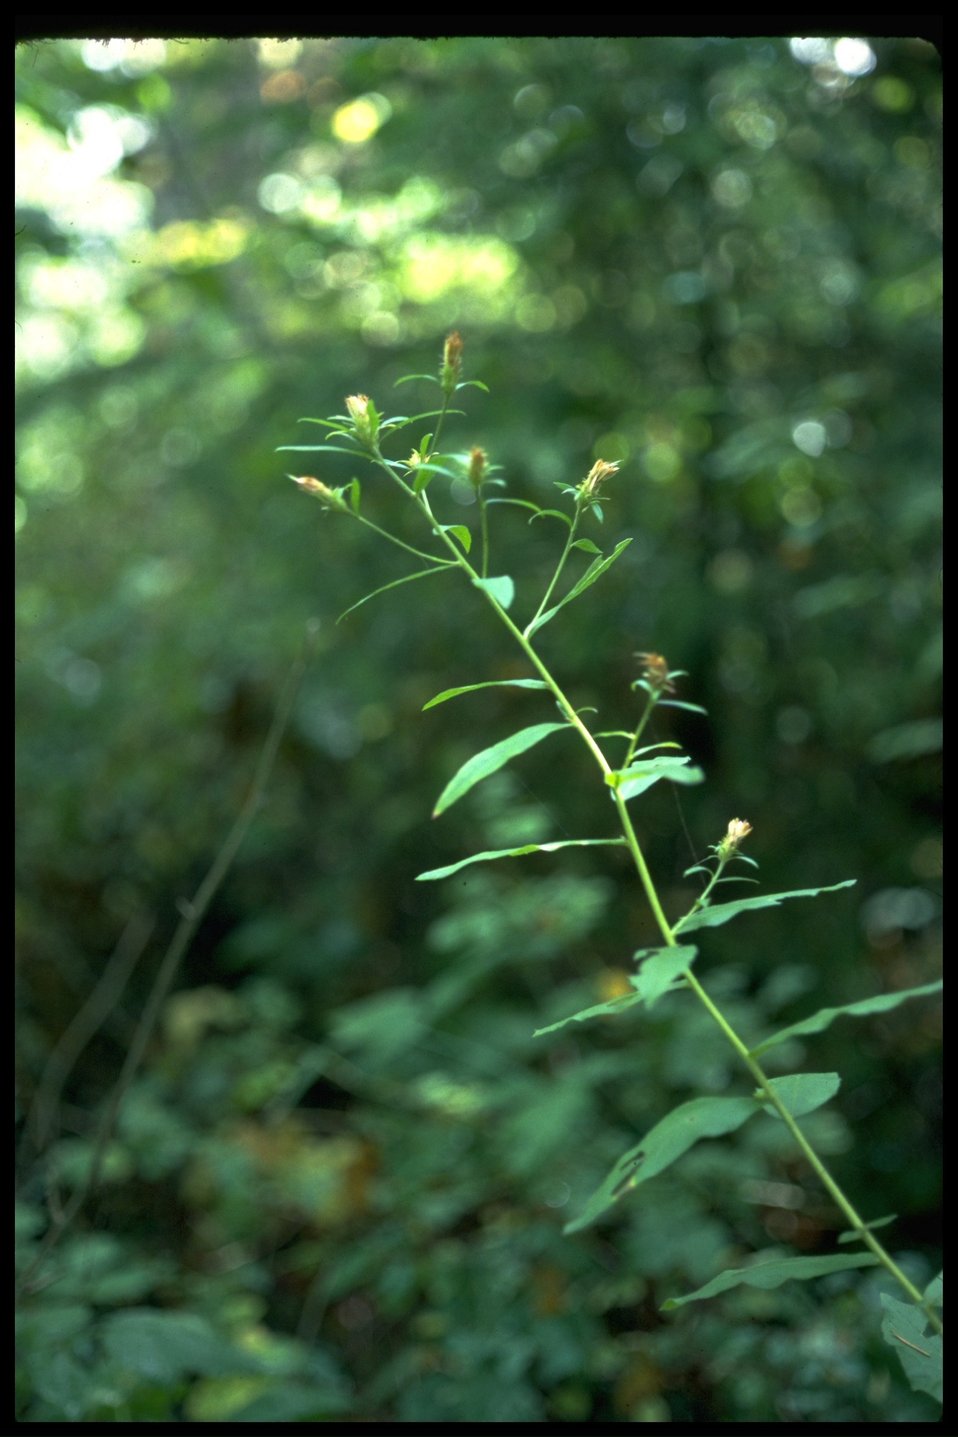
Aster vialis, commonly known as Wayside Aster.